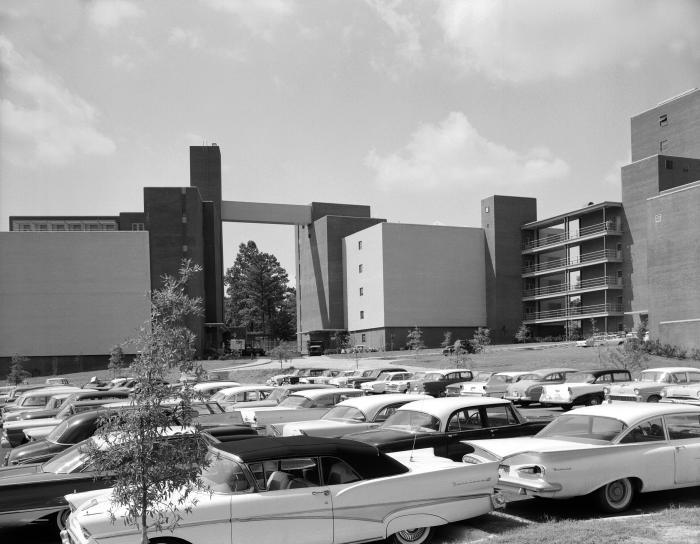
This historic view, looking towards the west, depicts the appearance of the Centers for Disease Control and Prevention's (CDC) geographic presence in 1960. Buildings 4 and five are highlighted in this view of the old physical plan.